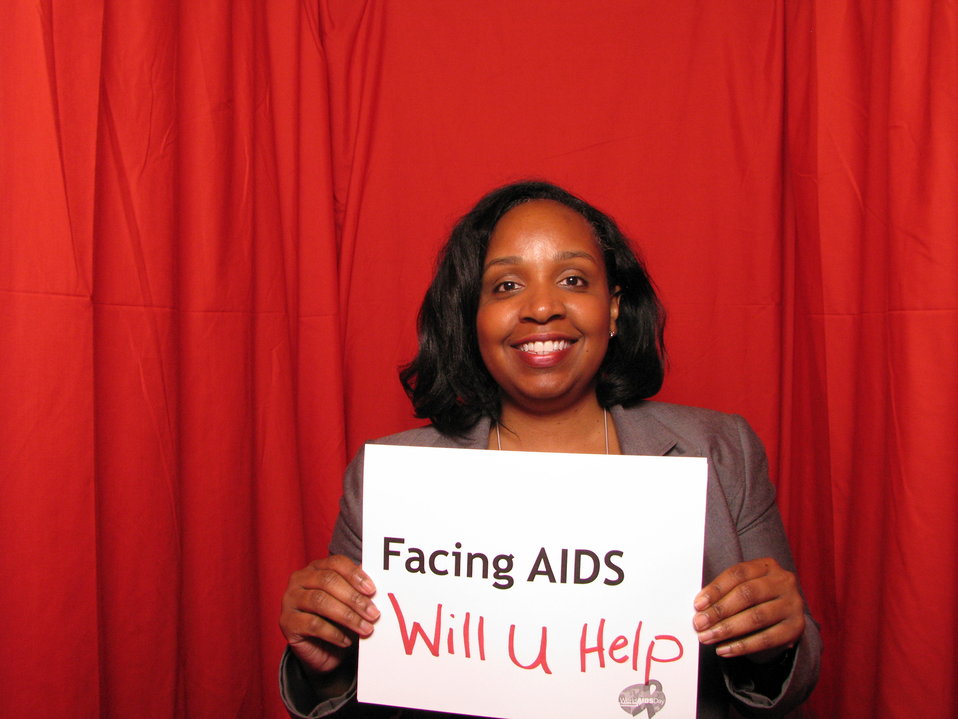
FACING AIDS WILL U HELP?

From the AIDS.gov photo booth at the U.S. Conference on AIDS, September 2010 (Orlando, FL).